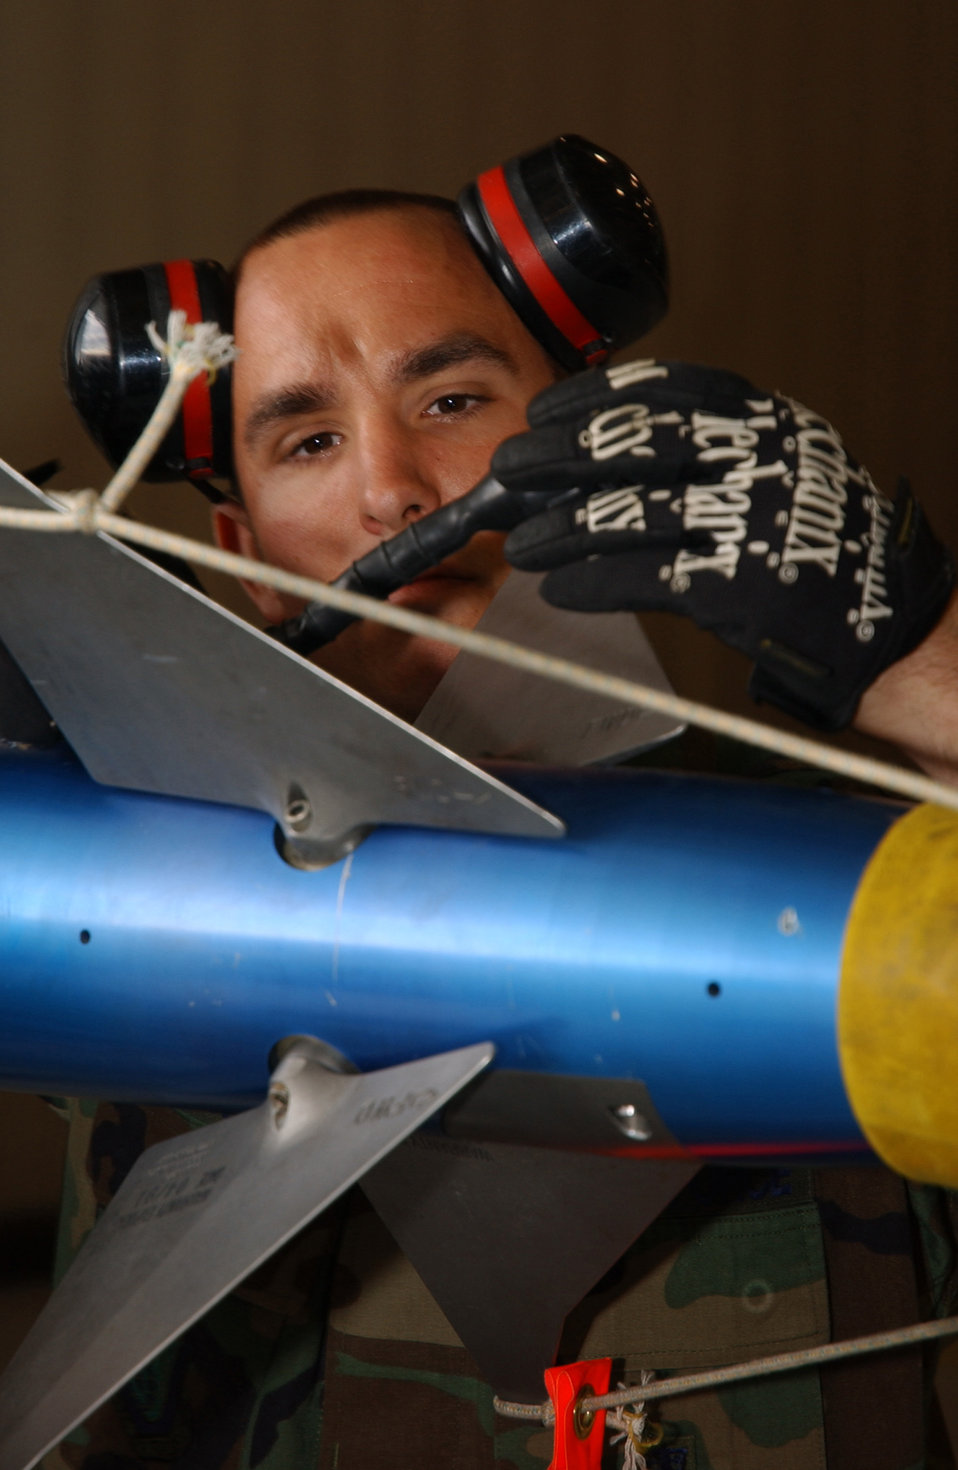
Checking the nine

EIELSON AIR FORCE BASE, Alaska -- Senior Airman Travis Sacket inspects a missile during a loading competition here April 22. Airman Sacket is a weapons loader with the 18th Aircraft Maintenance Unit.